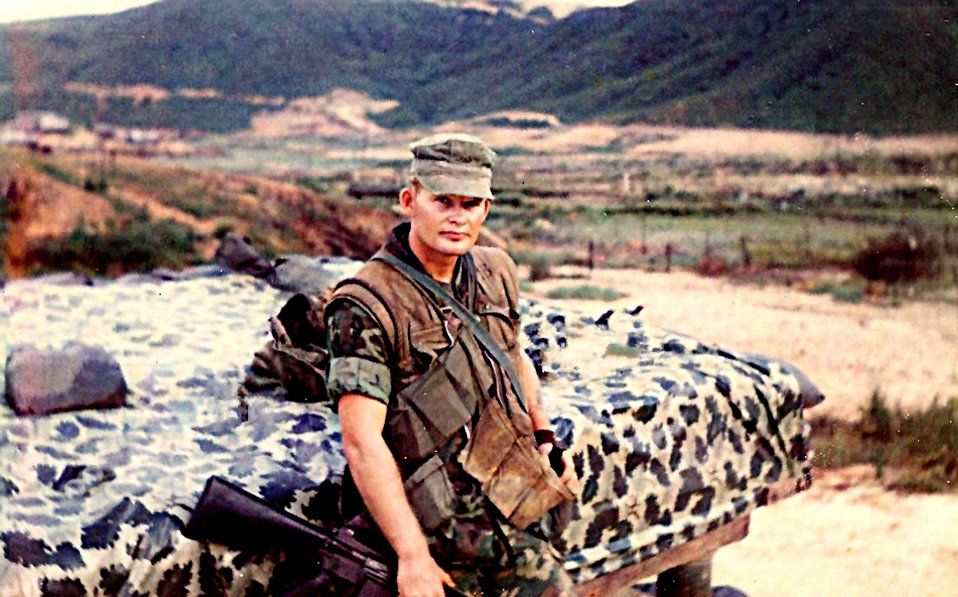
Jack Holbrook

Gunnery Sergeant Holbrook was drafted by the Marine Corps in April of 1968. After completing 12 weeks of recruit training in San Diego, 8 weeks of Infantry Training Regiment, 10 weeks of Schools Battalion, 4 weeks of Advanced Infantry Weapons and Tactics, and 4 weeks of Jungle Warfare Training at Camp Pendleton, California, Holbrook was given an 18-day leave to visit home with orders to report for duty in Vietnam upon return. Holbrook served 14 months in Vietnam earning several medals and service ribbons. Holbrook took a break from the Marine Corps after Vietnam, but returned to the Marine Corps for a career and retired from the Marine Corps in 1998. Today, Holbrook works for the Service as an Information Technology Systems Administrator in Region 1. Holbrook wrote about his year facing the draft, his time in Marine Corps training and his tour of duty in Vietnam in “Freedom Hill: The Alpha and Omega.”